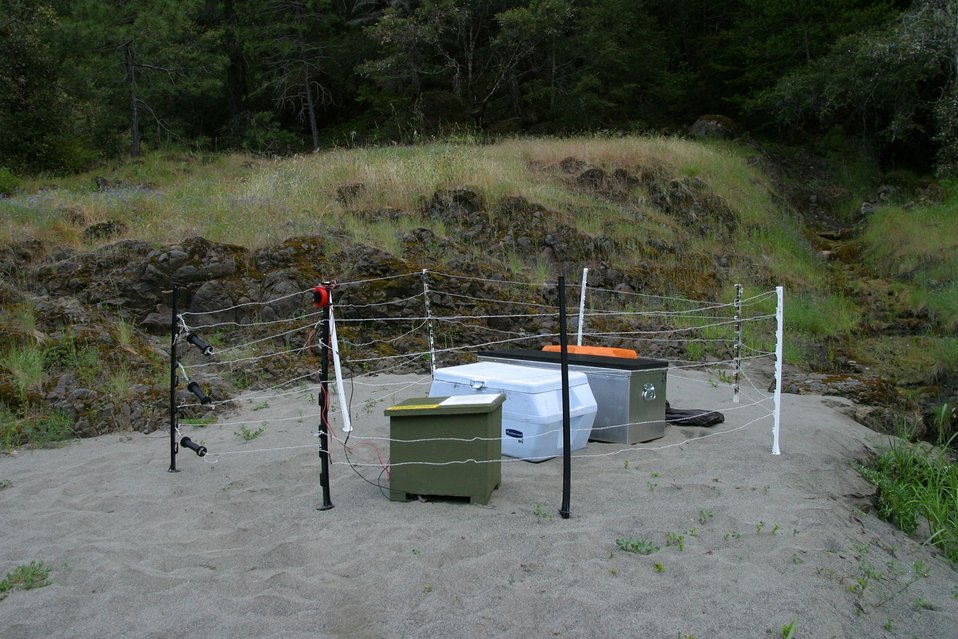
Wild section of the Rogue River from Grave Creek to Foster Bar May 19 to May 22.